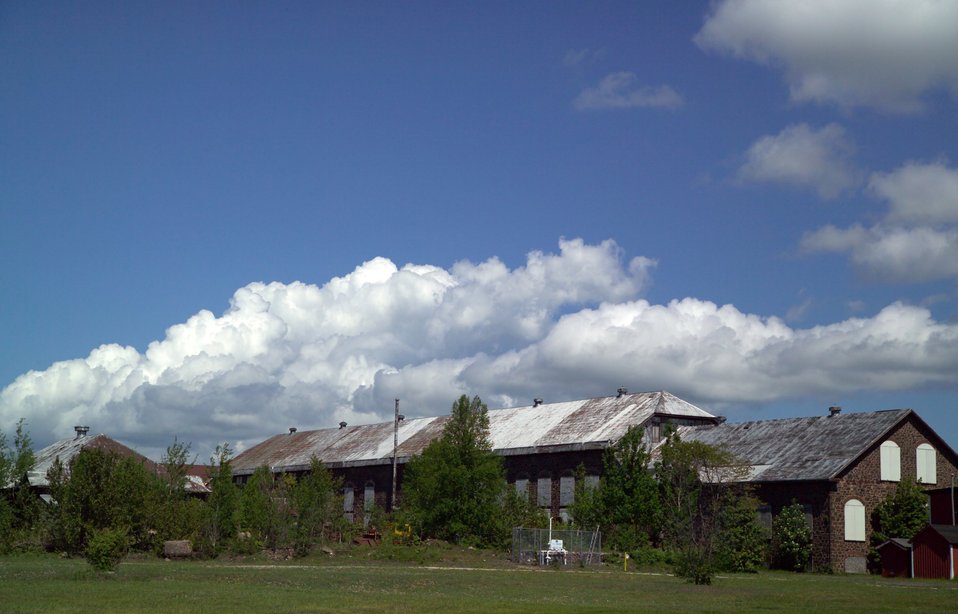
Calumet Hecla Copper Mining Co. Keweenaw Peninsula, Lake Superior